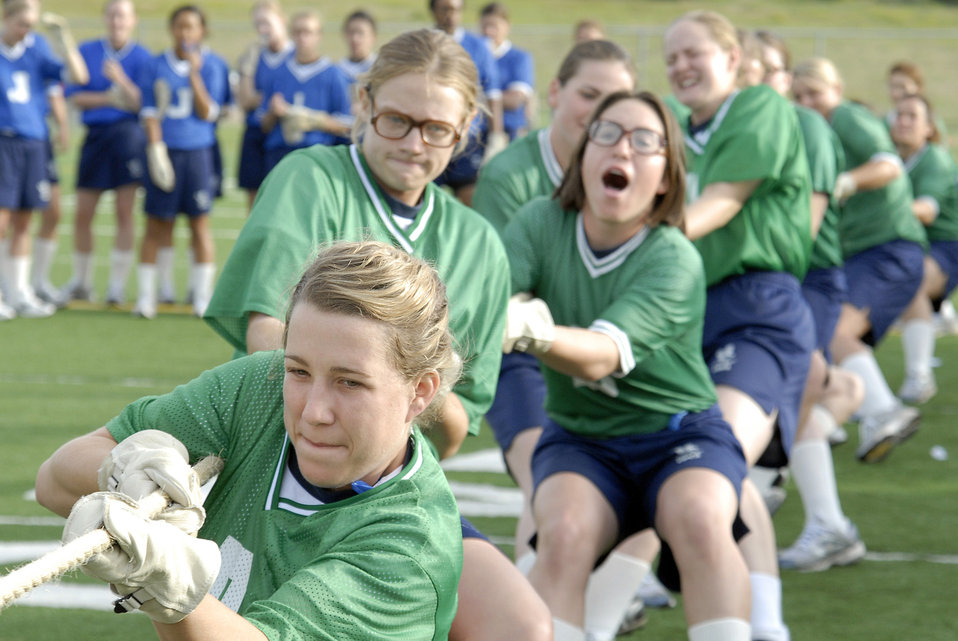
Class of 2013 Field Day

Basic cadet trainees with the U.S. Air Force Academy's Class of 2013 participate in the tug of war during Field Day activities here today. About 1,344 trainees competed in various athletic events during Field Day, including tug
of war, log relays, steeple chase and sprint relays. Basic cadet training started June 25 and continues through Aug. 1. The new cadets are in their first month of training and are learning about Air Force heritage, honor, discipline and Air Force core values, in addition to improving physical
fitness. The fall academic semester begins Aug. 6.